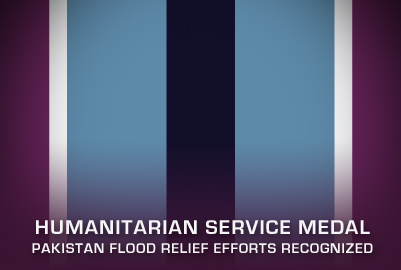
Humanitarian Service Medal